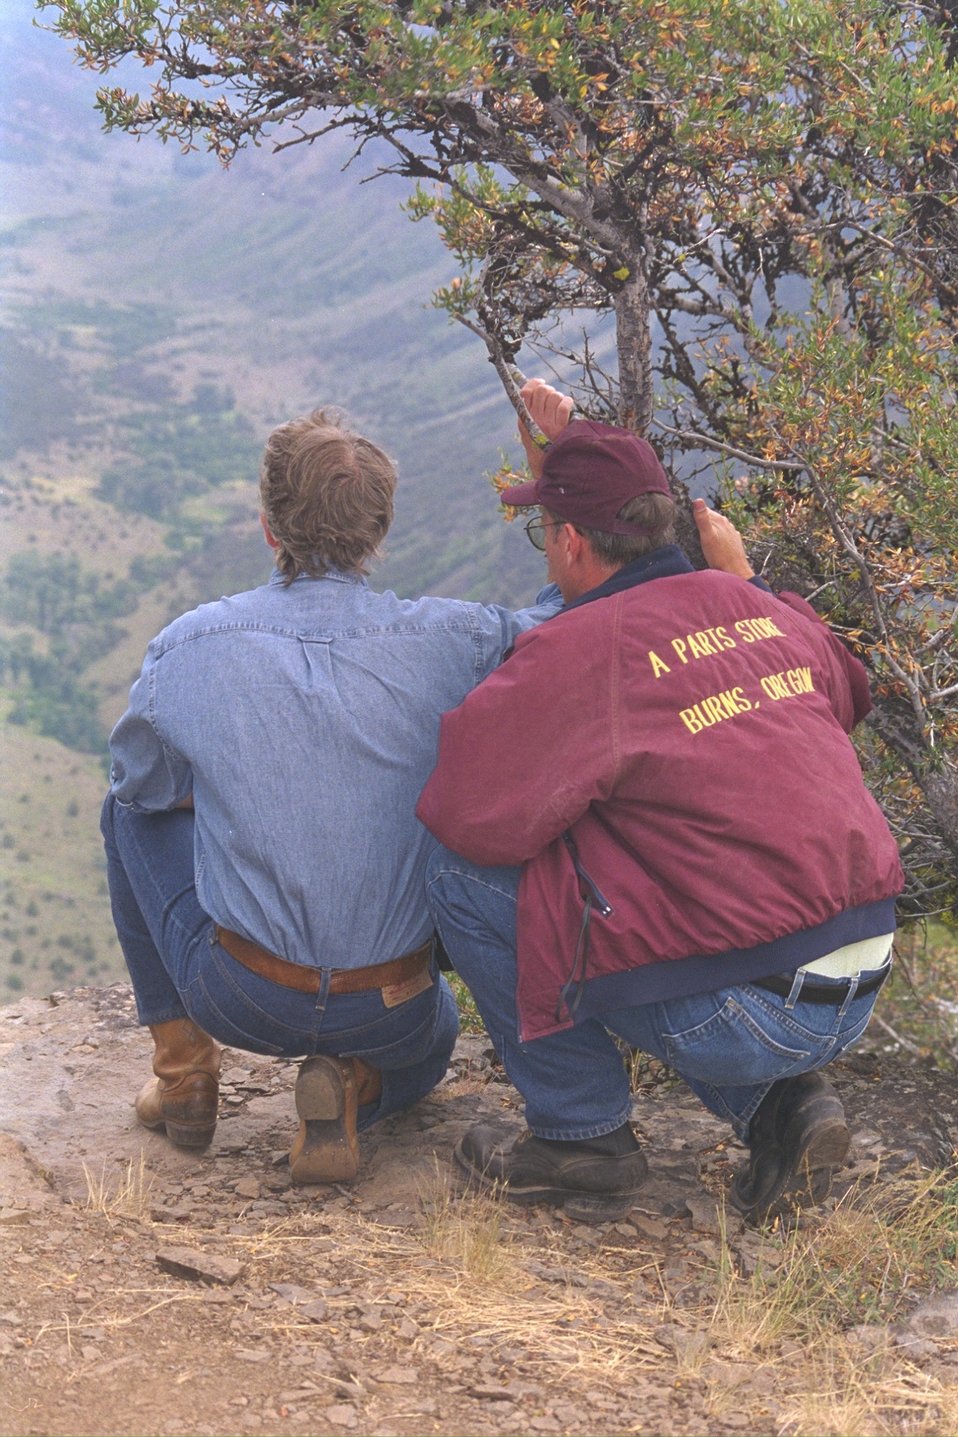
Governor Kitzhaber and Harney County Judge Steve Grosty discuss Steens Designation at Big Indian Gorge.